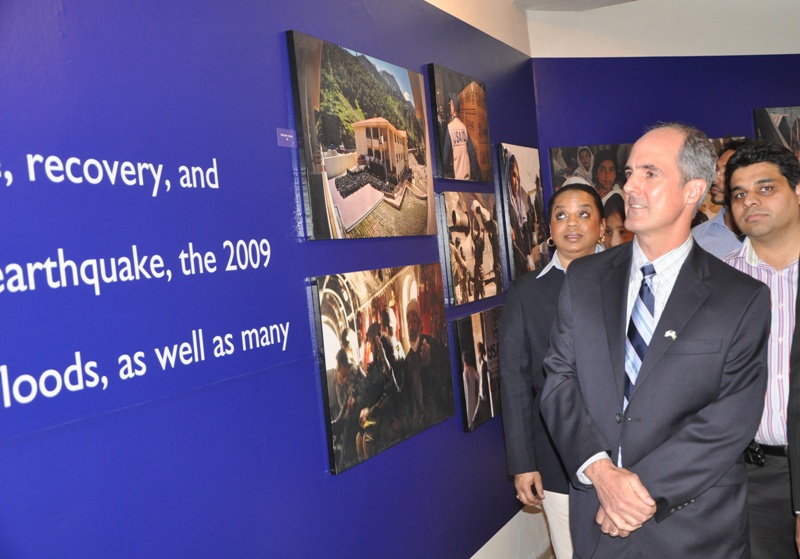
Provinicial Mission Director Punjab Ted Gehr and USAID team walking through the photos at gallery